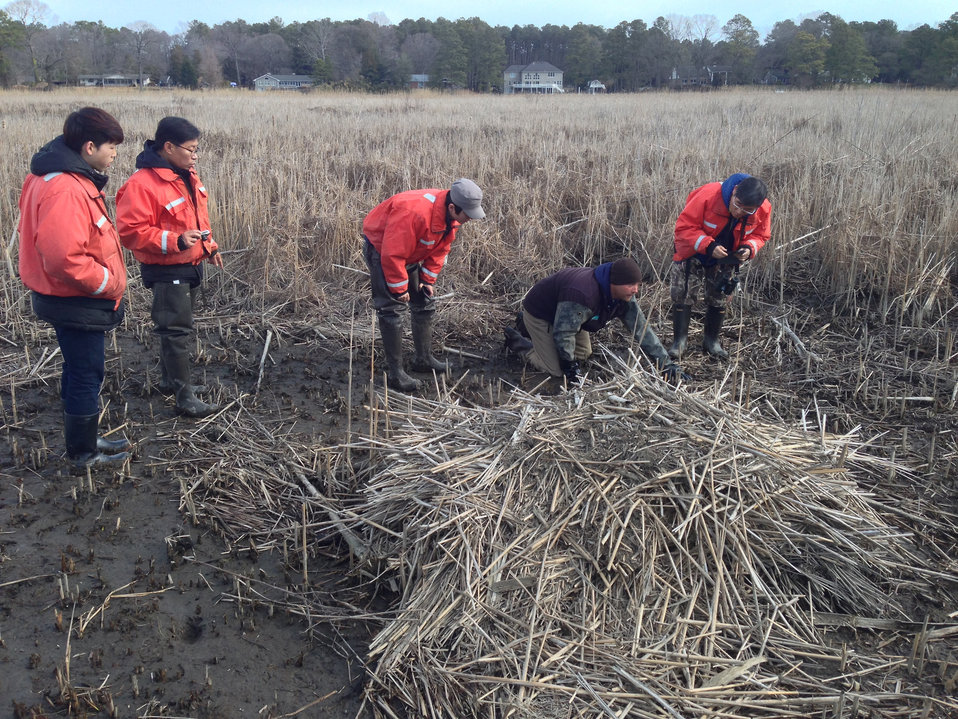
U.S. Department of Agriculture (USDA) Animal and Plant Health Inspection Service (APHIS) Wildlife Services (WS) eradication specialist Cory Abbott points out signs of nutria presence and damage in Chesapeake Bay to South Korean researchers.